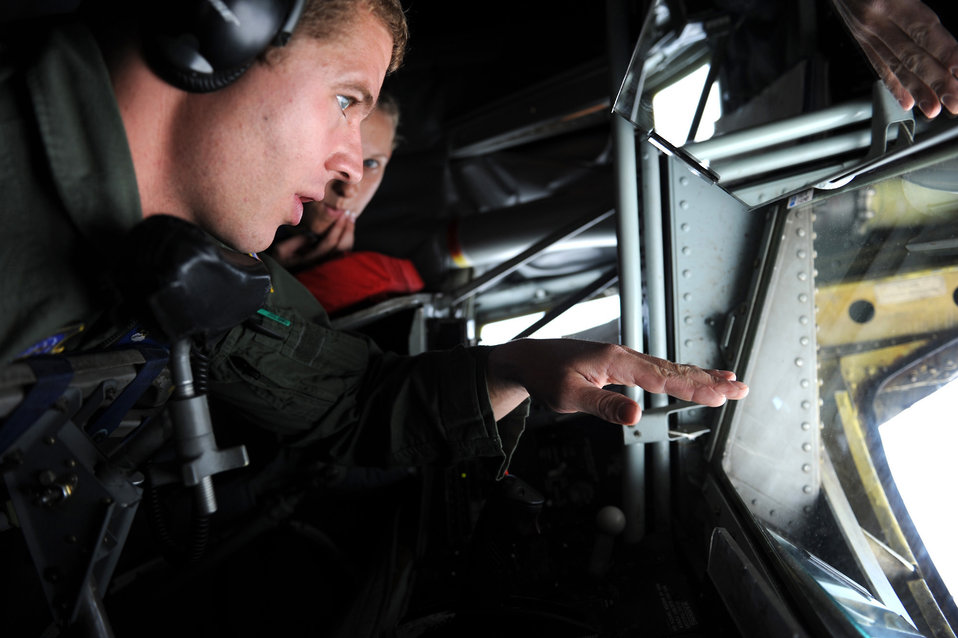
Air Refueling

Staff Sgt. Patrick Martin explains air refueling to Kaitlin Eskut on a KC-135 Stratotanker during a training mission, Apr. 21, 2010, at McConnell Air Force Base, Kan. Sergeant Martin is a boom operator assigned to the 344th Air Refueling Squadron. Ms. Eskut is an Air Force JROTC cadet that recieved an incentive flight and attends Lyon High School, Lyons, Kan.